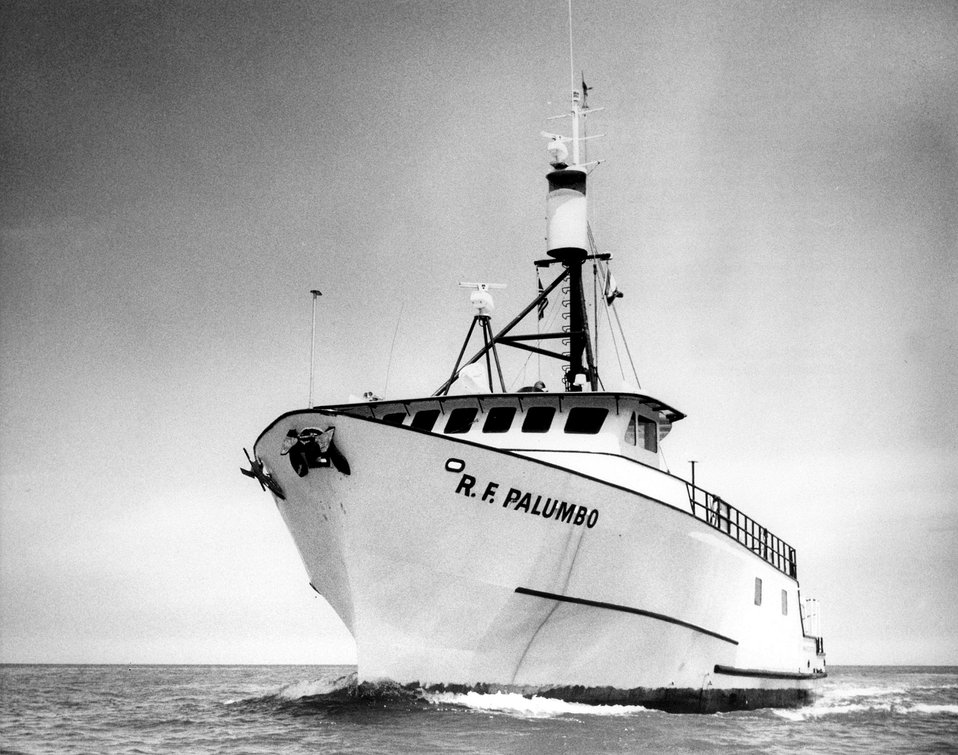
The U.S. Atomic Energy Commission's research vessel, R.F. Palumbo has been in service since 1971. Circa 1972.